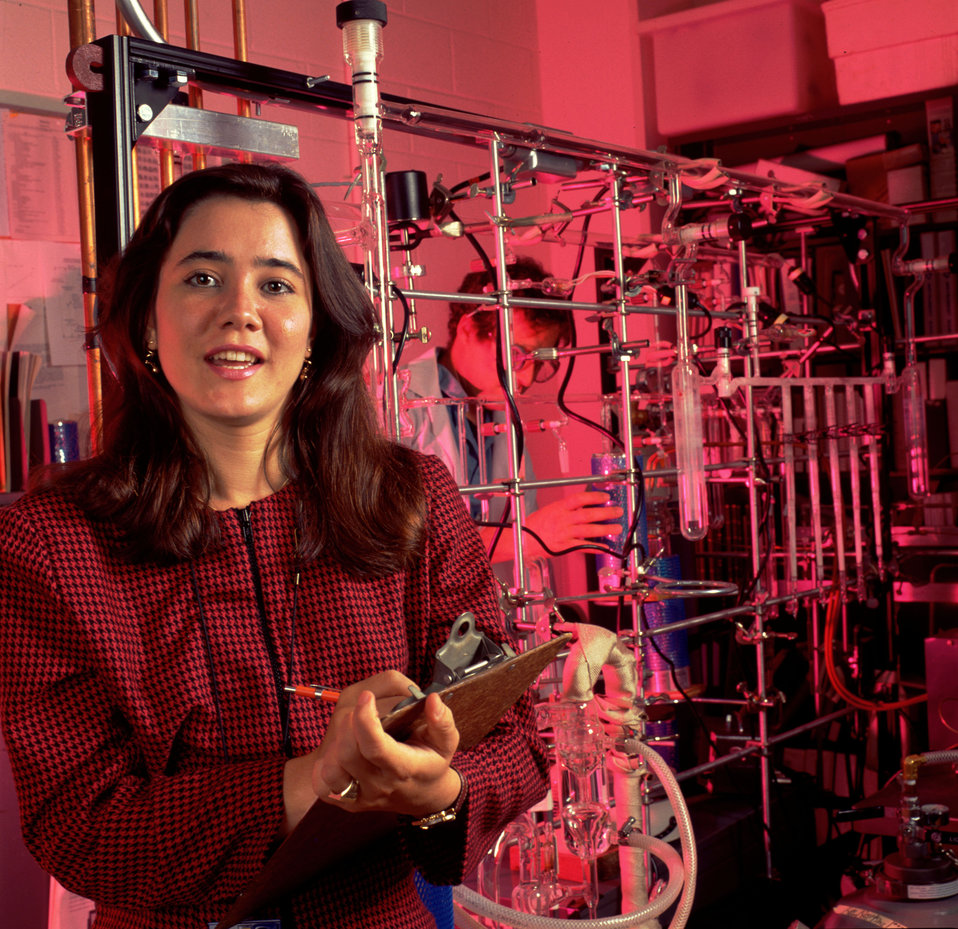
Oak Ridge National Lab ORNL Aquatic Ecology Lab Oak Ridge

92-697 DOE photo by Lynn Freeny 7-27-1992 Oak Ridge Tennessee